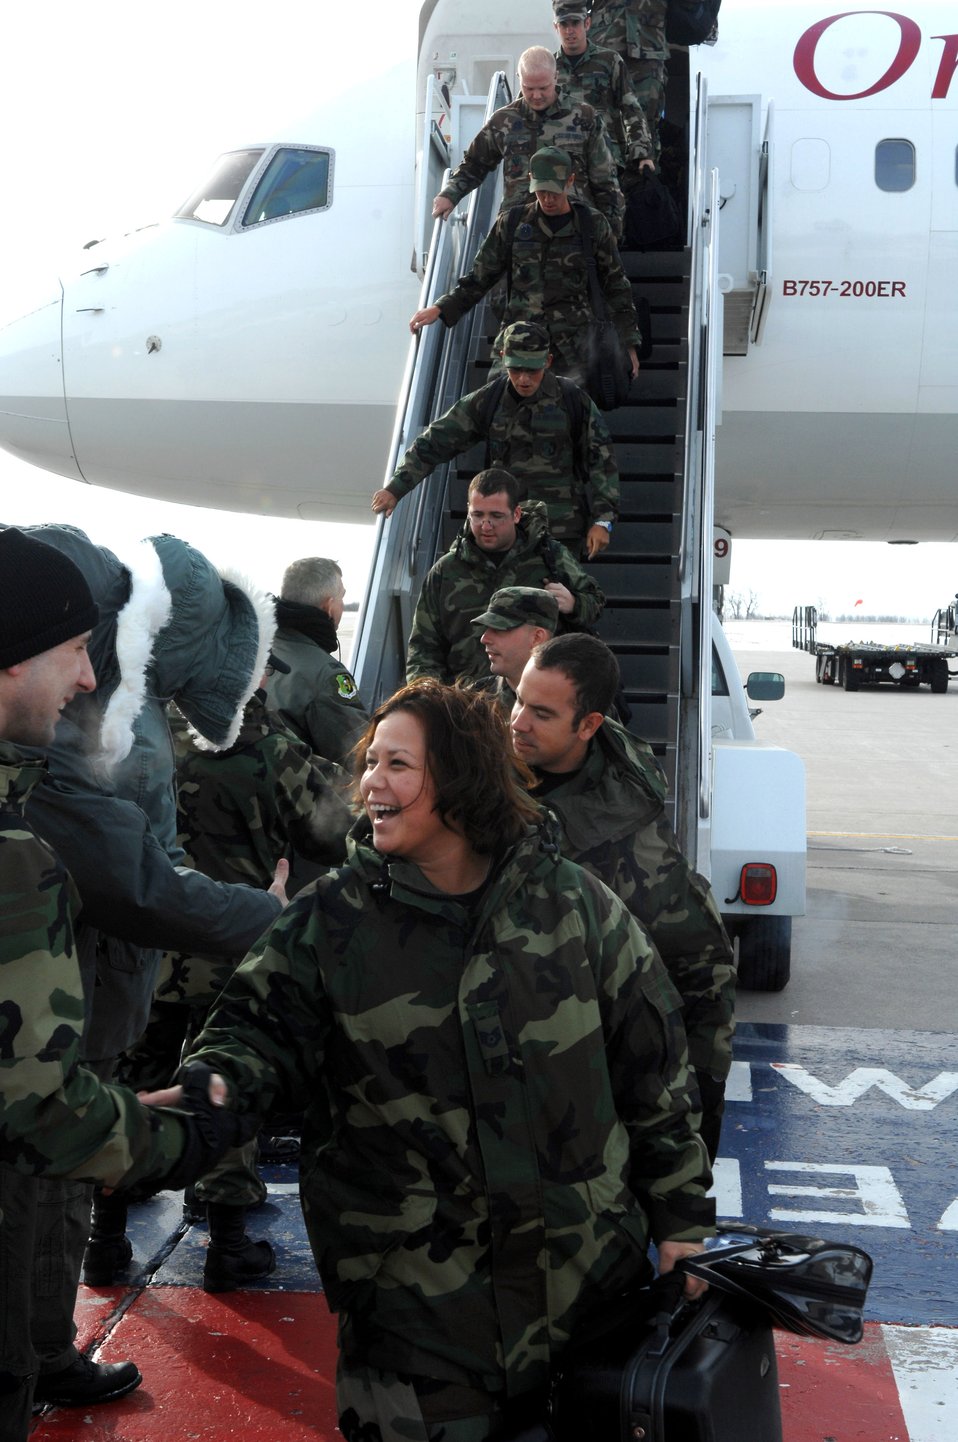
Minot Airmen return home from Andersen deployment

Airmen are greeted by base leaders after returning from a deployment Jan. 30 to Minot Air Force Base, N.D. More than 100 Airmen were met by friends and family upon arriving home from a five-month deployment to Andersen Air Force Base, Guam.